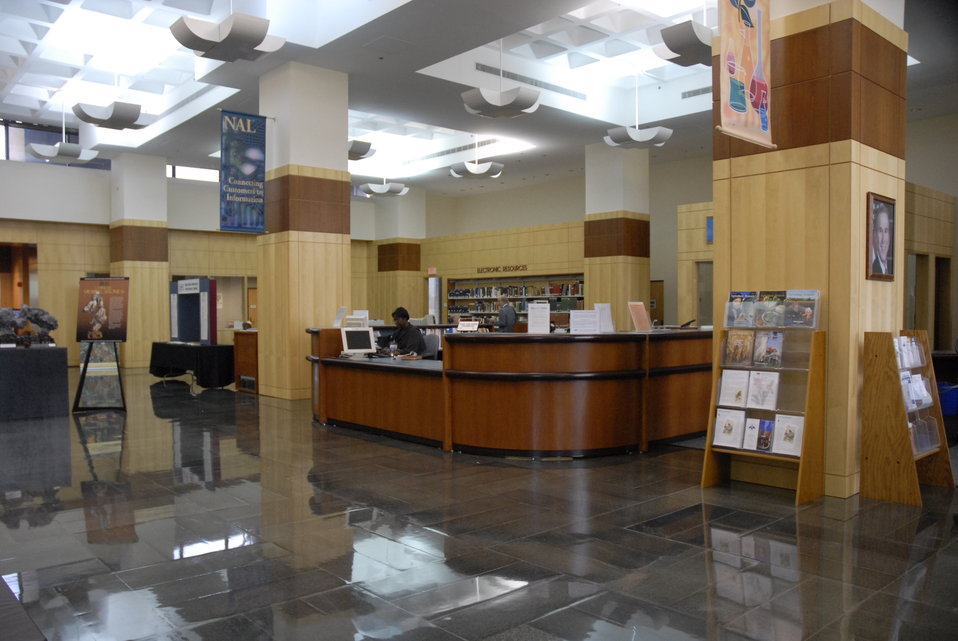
This the main lobby of the U.S. National Agricultural Library (NAL) in Beltsville, MD on August 22, 2008. NAL is one of the world's largest agricultural research libraries, and serves as a national library of the U.S. and as the library of the U.S. Department of Agriculture (USDA). The library is one of four national libraries of the U.S. (along with the Library of Congress, the National Library of Medicine, and the National Library of Education). It is also the coordinator for the Agriculture Network Information Center, a national network of state land-grant institutions and coordinator for USDA field libraries. NAL was established on May 15, 1862, by the signing of the Organic Act by Abraham Lincoln. It served as a departmental library until 1962, when the Secretary of Agriculture officially designated it as the National Agricultural Library. USDA photo Alice Welch.